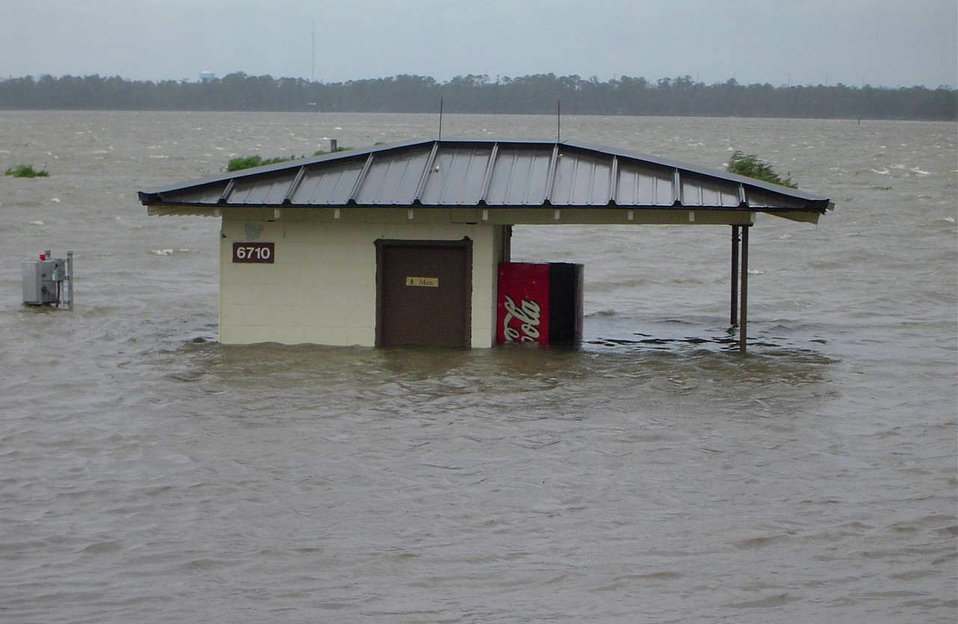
People venture outside Keesler shelters

KEESLER AIR FORCE BASE, Miss. -- Record low pressure, 125 mph winds and high tides converged to create a storm surge that raised the level of the Back Bay nearly 30 feet above normal. This restroom lies between the 12th and 13th holes on back nine of the golf course here.